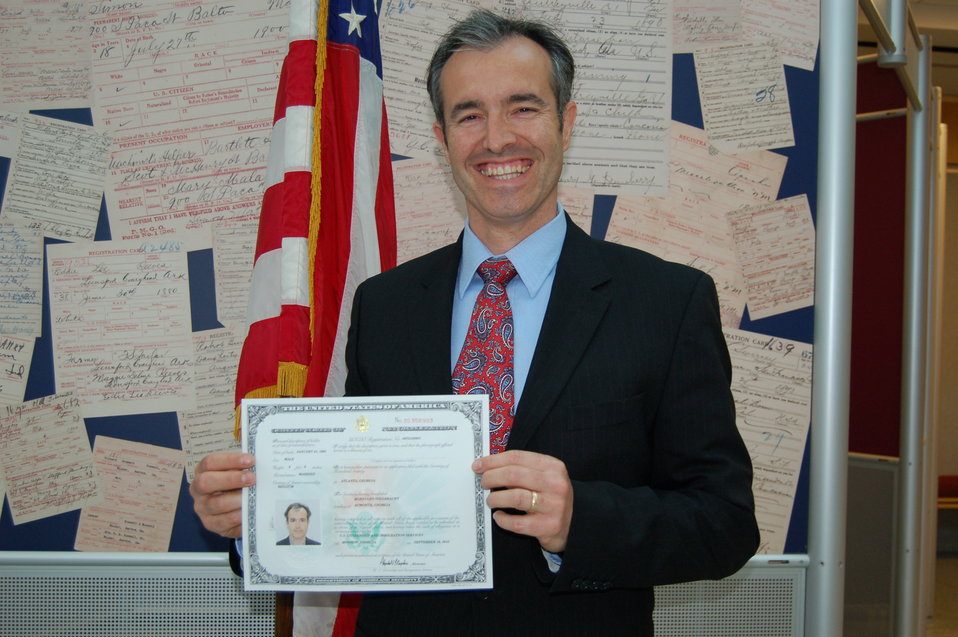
New Citizens